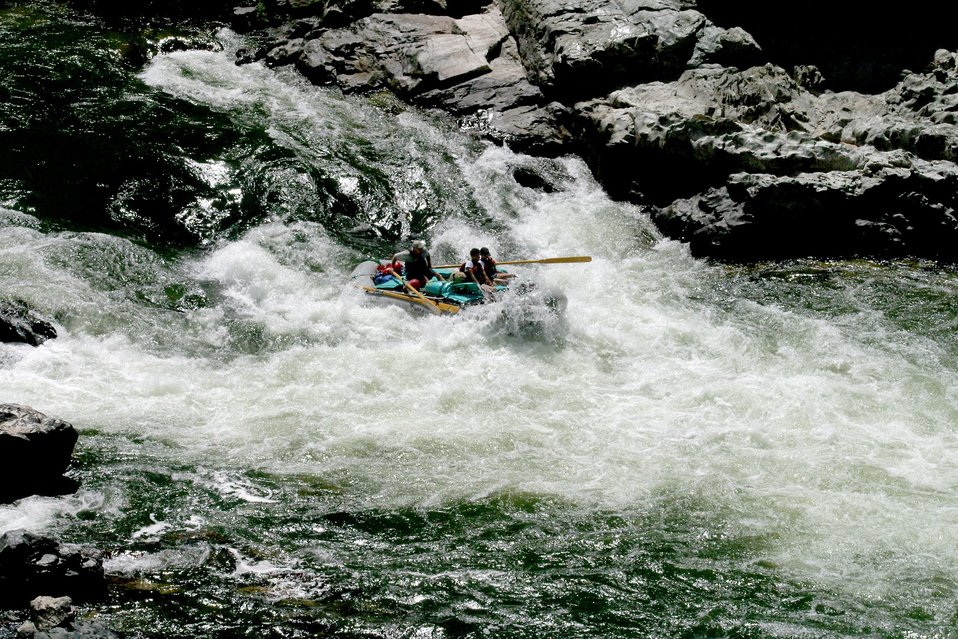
Boater at Grave Creek Falls